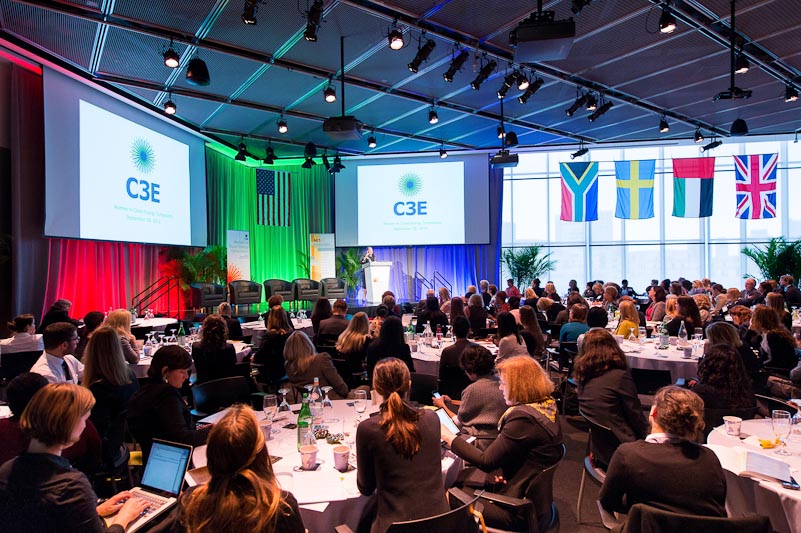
Women in Clean Energy Symposium